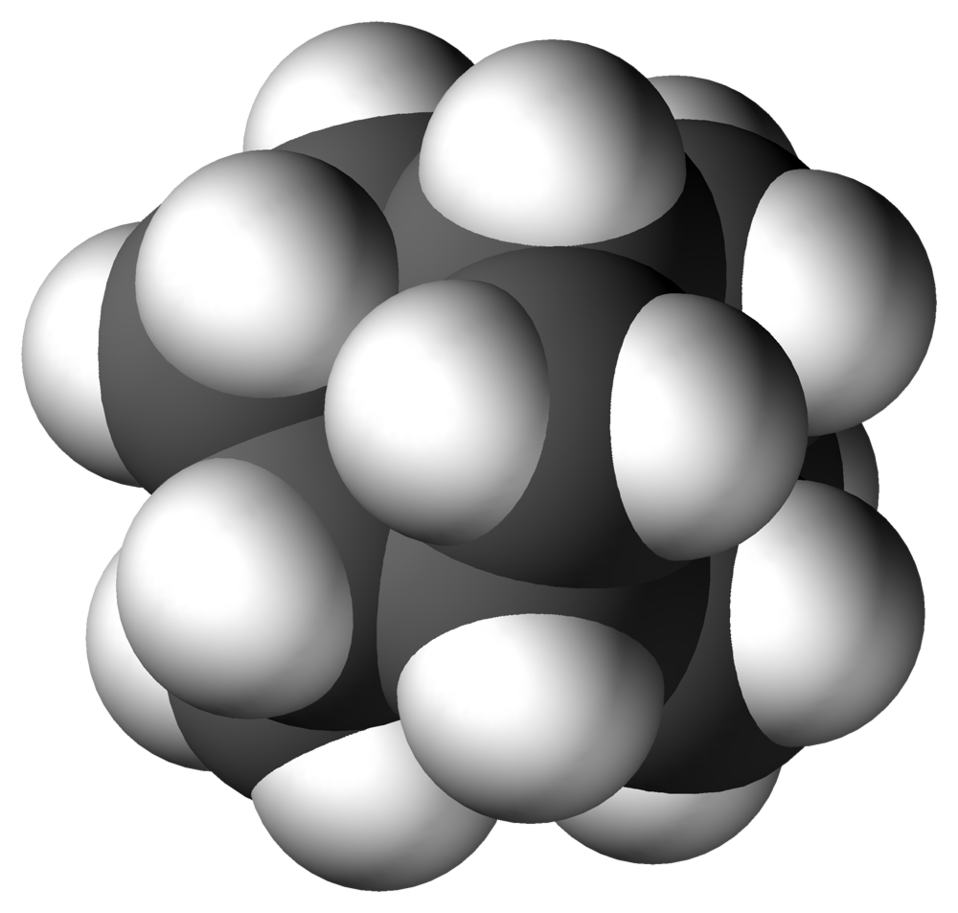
Chemical structure of Iceane